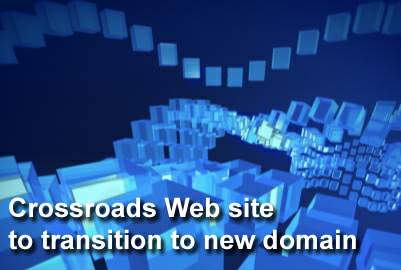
Air Force officials enhance community support information

As Air Force officials continue to modernize information sharing to meet 21st century mission requirements, manpower and personnel force development officials have taken a look at the official community Web site of the Air Force to increase its effectiveness. Transition is under way for the Air Force Crossroads Web site, but officials want to ensure Airmen and their families realize this important capability will continue to exist.